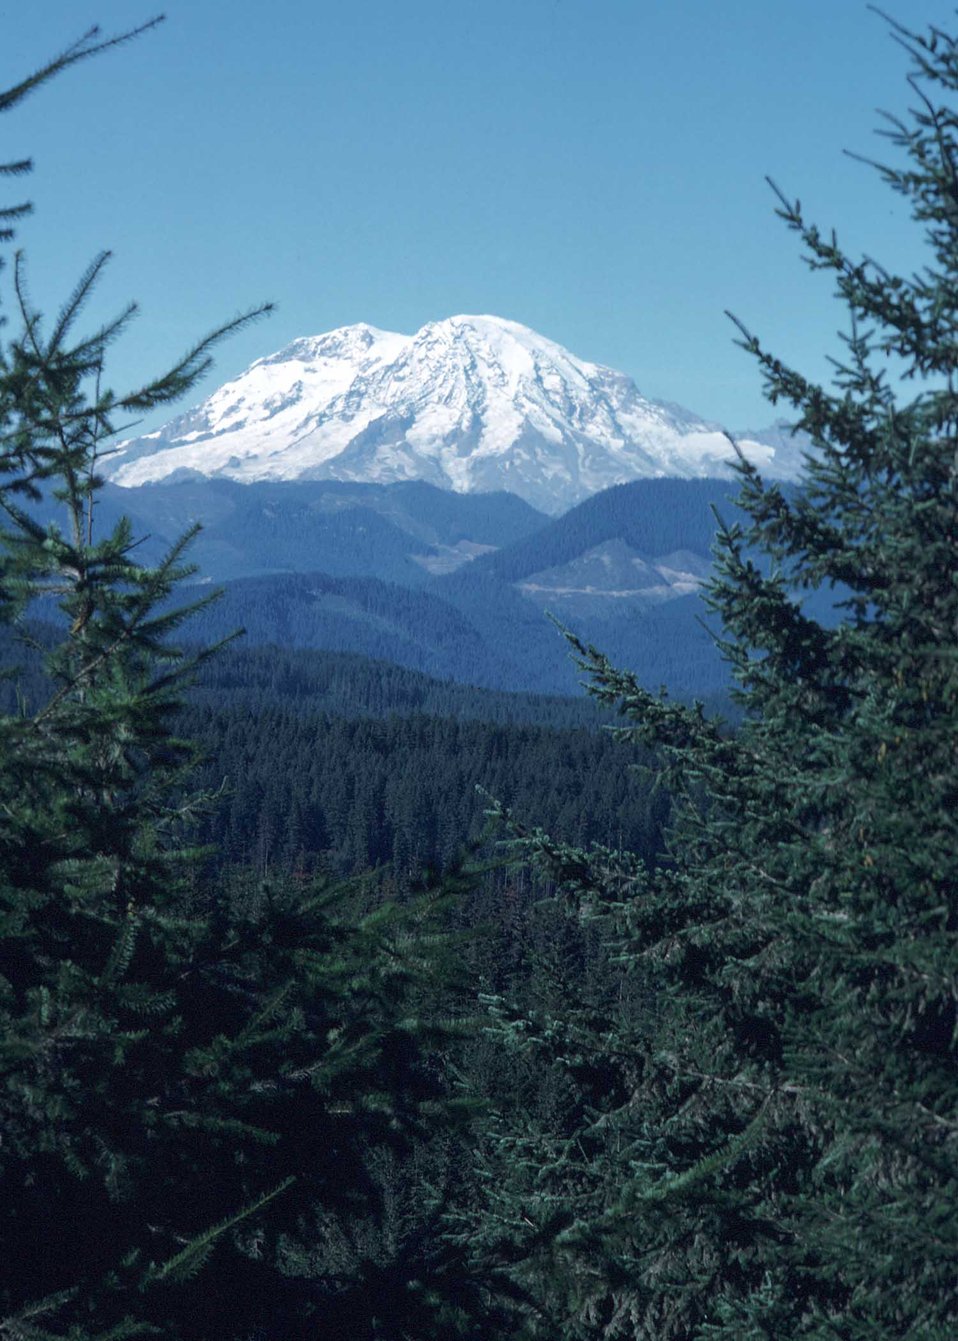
Mt. Rainier landscape

Landscape view of Mt Rainier.